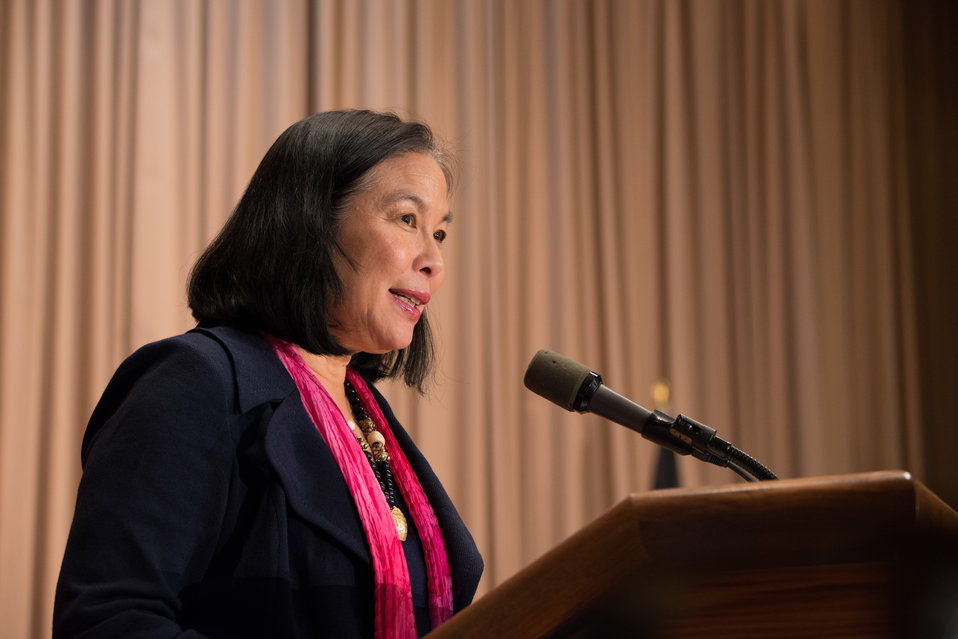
U.S. Department of Agriculture (USDA), Food Safety and Inspection Service (FSIS), Deputy Assistant Administrator and retired U.S. Public Health Service (USPHS) Public Health Science Captain Dr. Vivian Chen moderates the POW/MIA Honors Ceremony, during the 2013 USDA Veterans’ Day Observance, whose theme is “VALOR, COURAGE, SACRIFICE – HONORING ALL WHO SERVED,” in Washington, DC, on Wednesday, November 20, 2013.